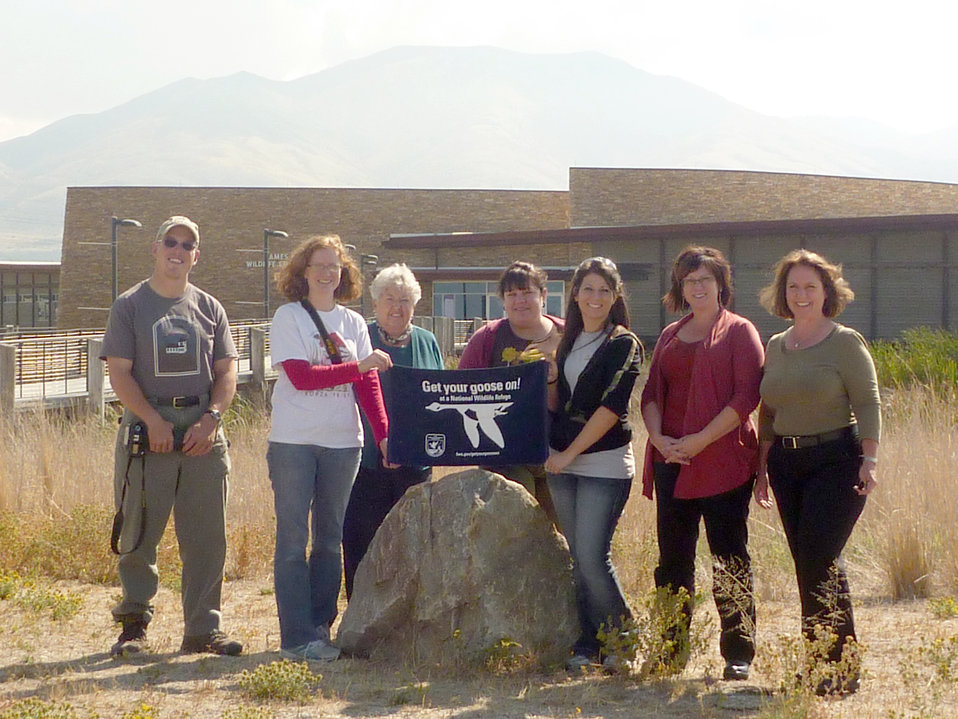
Get Your Goose On! - Bear River Style

USFWS Staff pose in front of the visitor center at Bear River Migratory Bird Refuge in Utah.